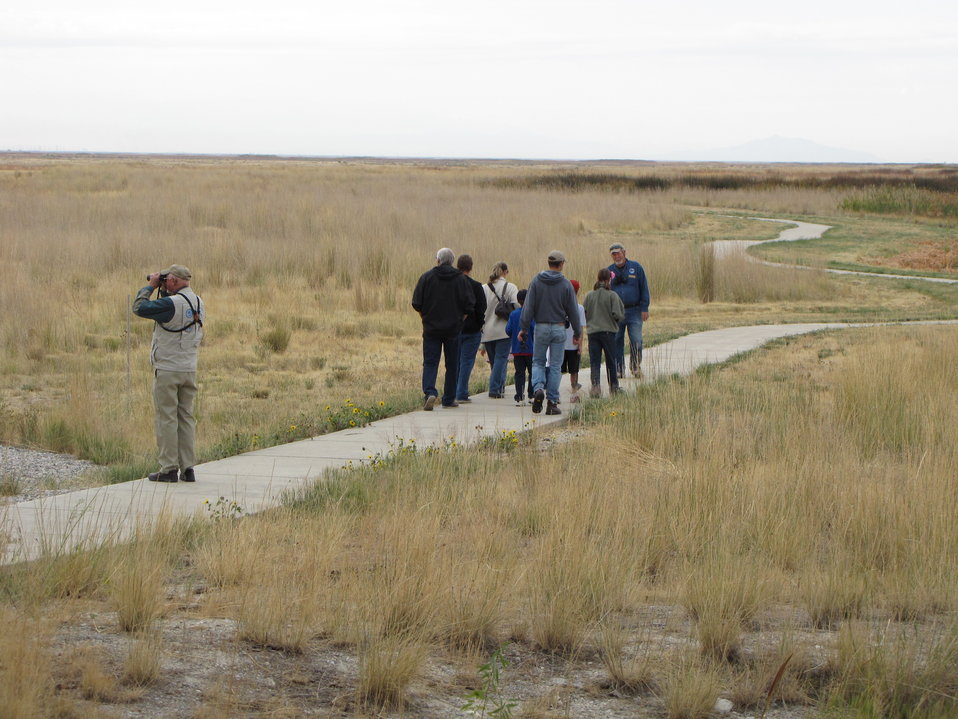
Volunteer Led Bird Walk

To celebrate National Wildlife Refuge Week - Bear River Migratory Bird Refuge had an Open House event with crafts, movies, games and volunteer led bird walks on our Wetland Walk trail. Here, volunteers Brian Ferguson and Lee Shirley lead visitors looking for hawks and migrating waterfowl on our half mile, handicapped accessible trail along the grasslands and wetlands near our Wildlife Education Center on October 2010.